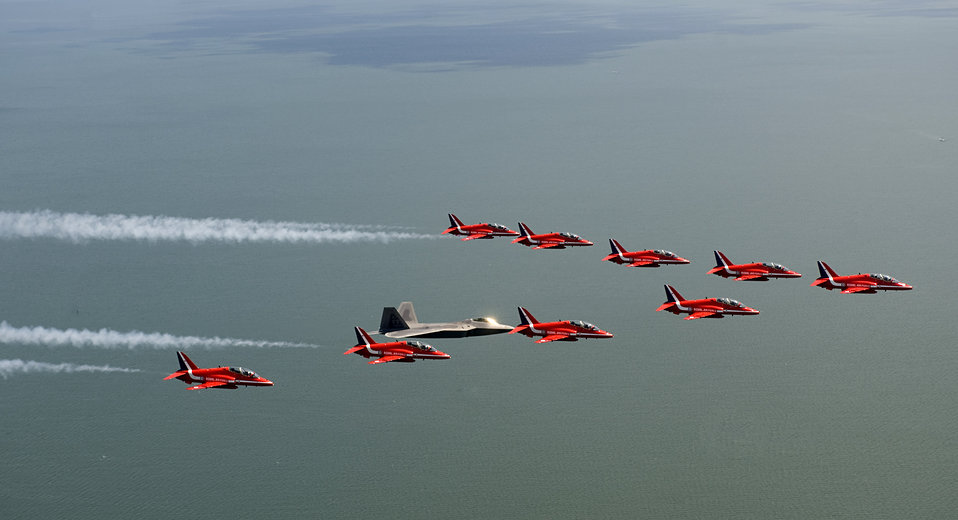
Raptor joins Red Arrows

Maj. Paul Moga flies in formation in an F-22 Raptor with the Royal Air Force Aerobatic Team, The Red Arrows, during an afternoon practice flight June 18 at Langley Air Force Base, Va. The aircraft will perform at AirPower over Hampton Roads, the Langley AFB airshow, which is scheduled for June 20 to 22. Major Moga is an F-22 Demonstration Team pilot.